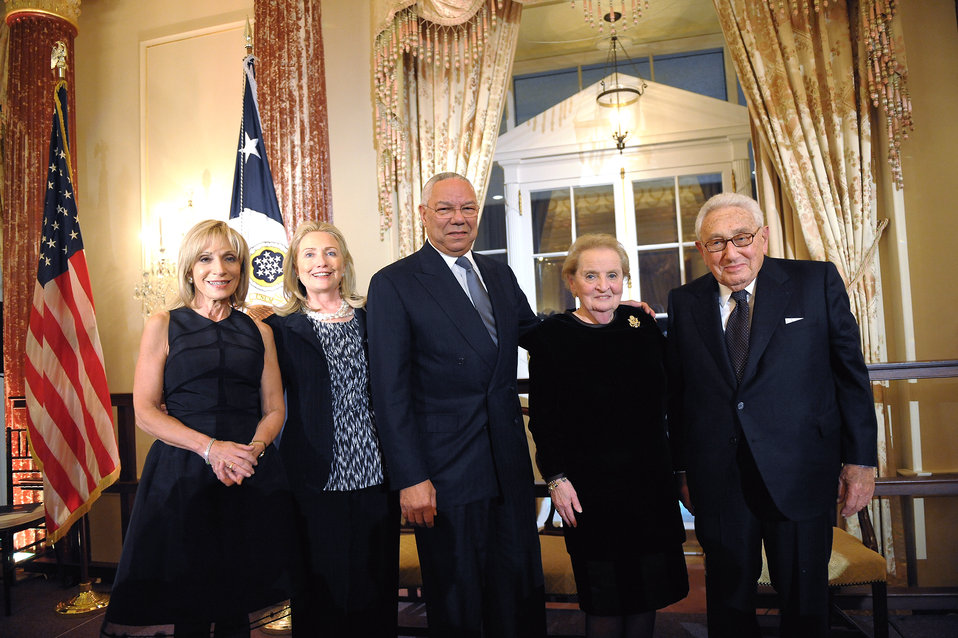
NBC's Andrea Mitchell, Secretary Clinton, and Former Secretaries General Powell, Albright, and Kissinger Pose for a Photo

U.S. Secretary of State Hillary Rodham Clinton, second from left; poses for a photo with former Secretaries of State General Colin Powell, center; Madeleine Albright, second from right; and Henry Kissinger, right; as well as NBC's Andrea Mitchell; to celebrate the 50th Anniversary of the Diplomatic Reception Rooms and the Completion of the Patrons of Diplomacy Endowment Campaign at the U.S. Department of State in Washington, D.C., on October 27, 2011.